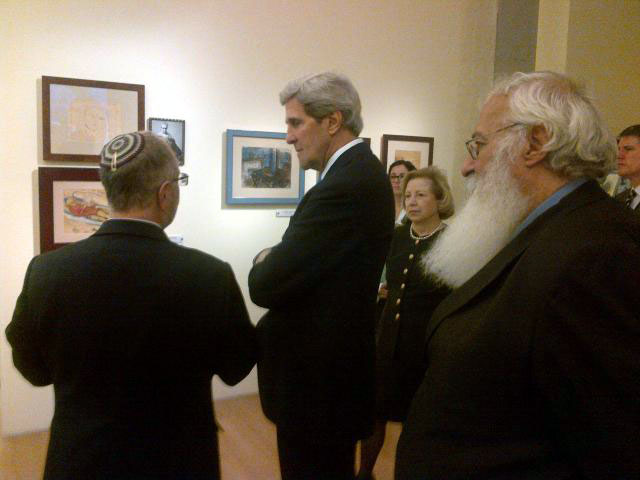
Dr. Rozett Explains an Art Exhibit to Secretary Kerry

Dr. Robert Rozett, Director of the Yad Vashem Libraries, explains part of an art exhibit to U.S. Secretary of State John Kerry at Yad Vashem in Jerusalem on March 22, 2013.